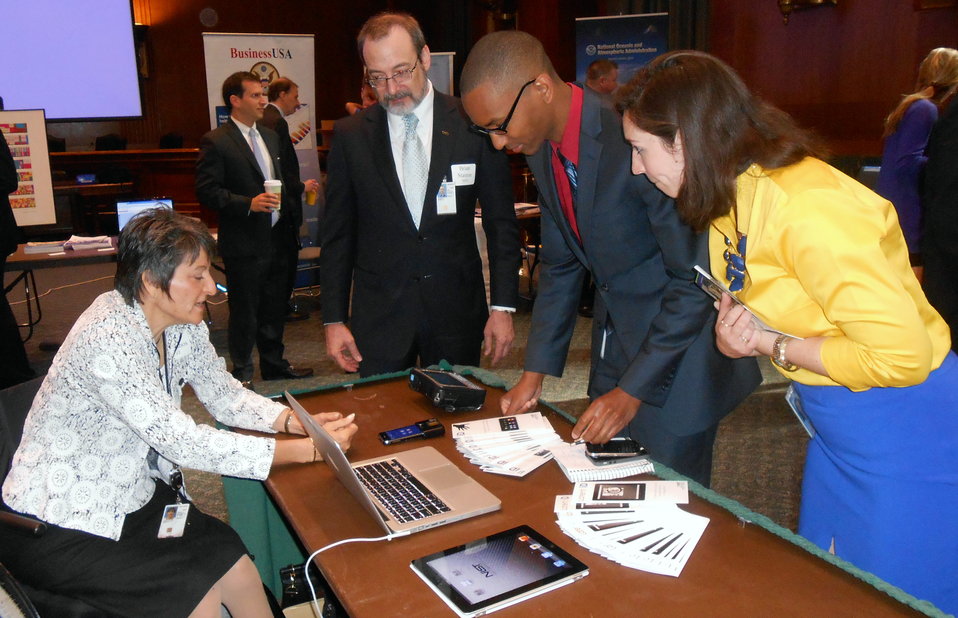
NIST computer scientists Mary Theofanos (left) and Brian Stanton (center left) describe NIST research into mobile devices that enable accurate fingerprint analysis in the field to congressional staffers as part of the Department of Commerce Day on the Hill event in the Dirksen Senate Office Building.